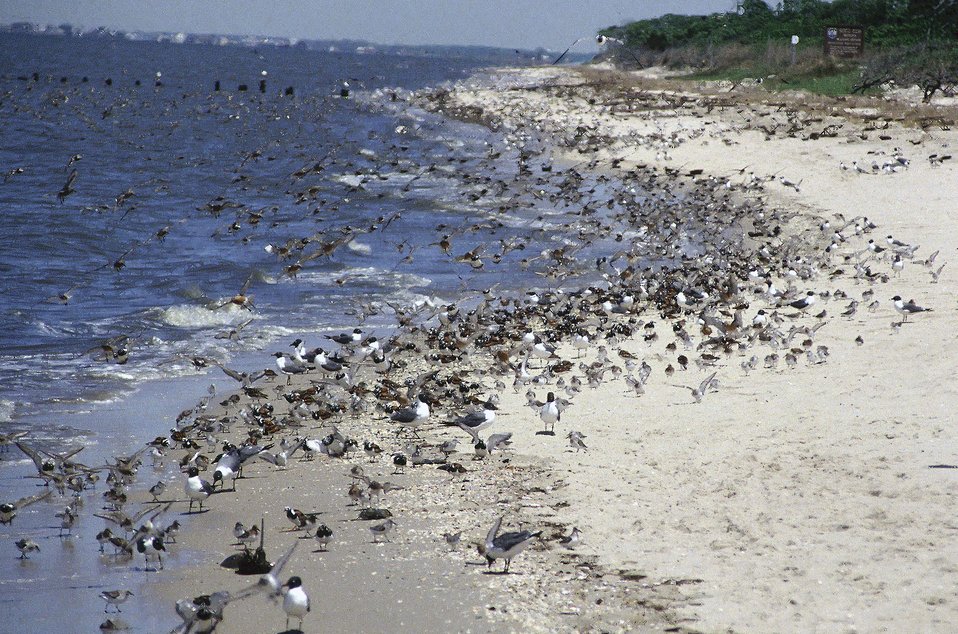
Nordbury's Landing

Cape May National Wildlife Refuge, NJ.